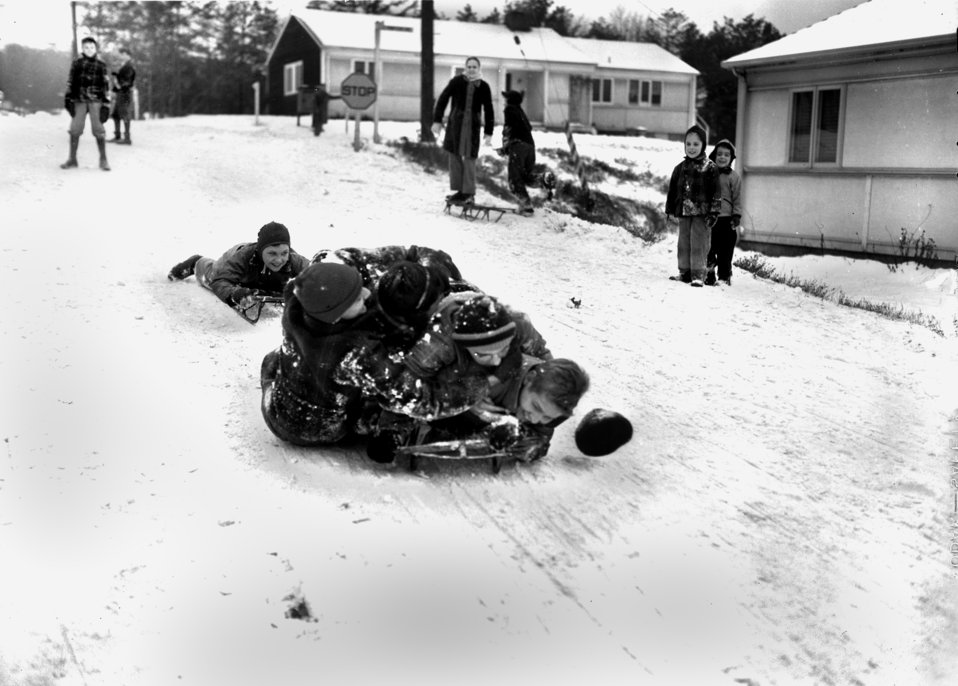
Snow Sledding Oak Ridge

4276-7m DOE photo Ed Westcott 1-25-1948 Oak Ridge Tennessee